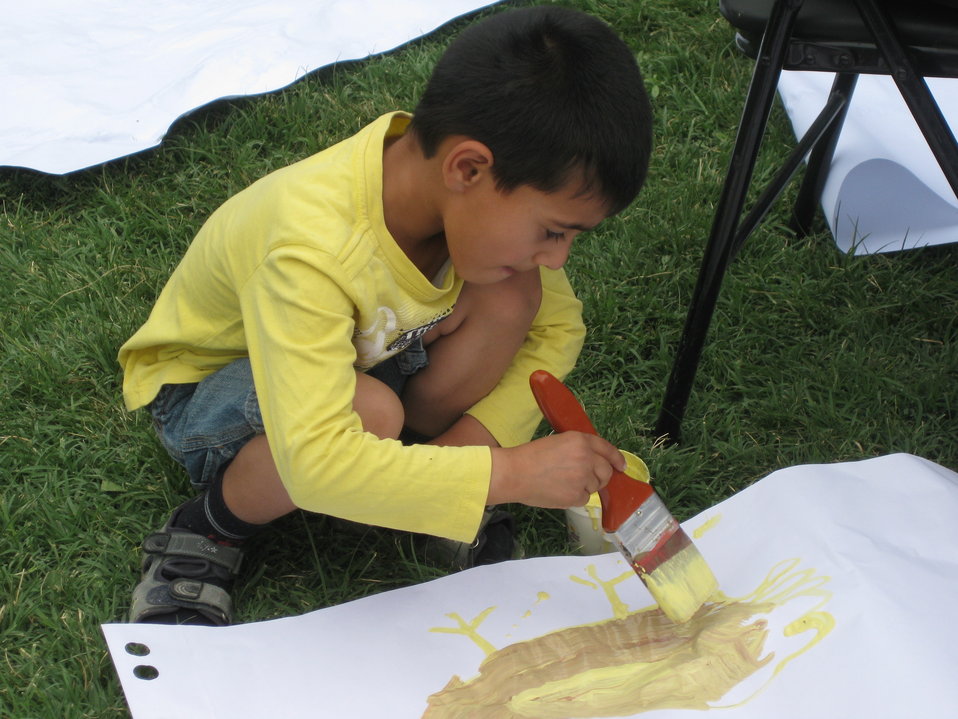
Afghan Youth Voices 086